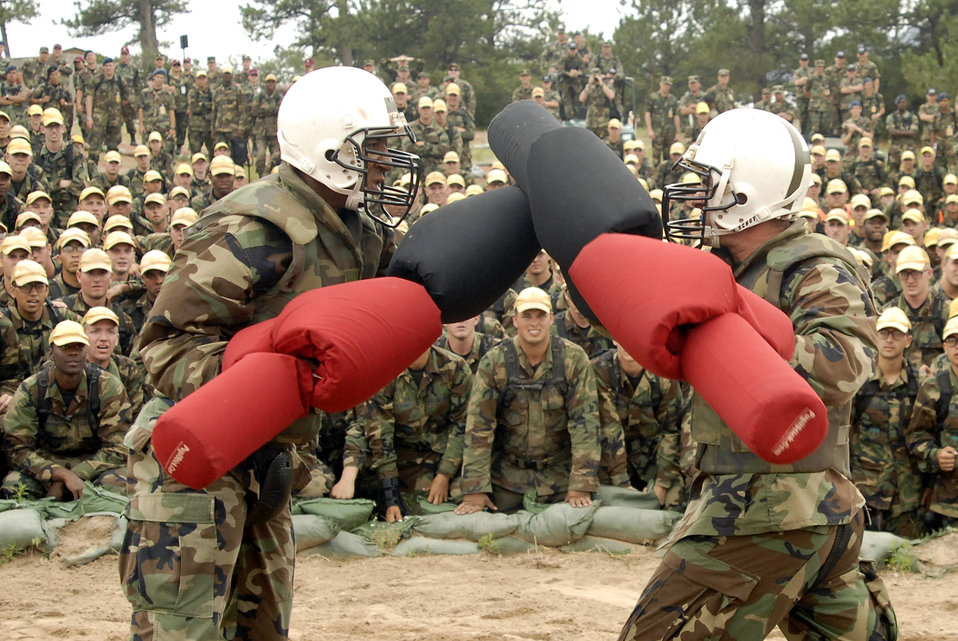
Academy cadets vie to become 'Big Bad Basic'

Academy basic cadet trainees Lawrance Franklin (left) and Griffin Biscone battle it out July 28 at the U.S. Air Force Academy, Colo., for the title of